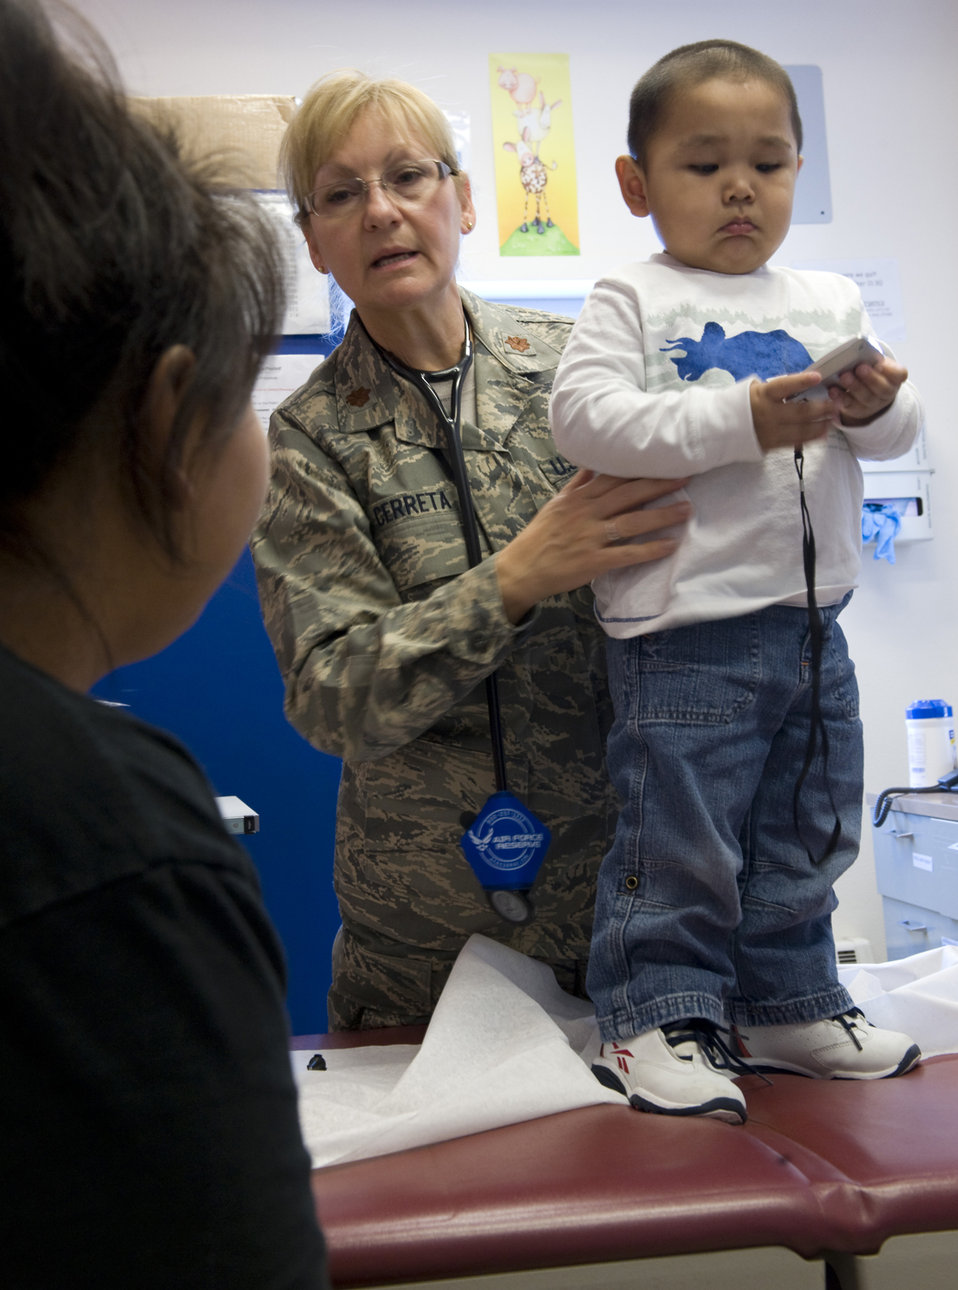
Operation Arctic Care

Maj. Emily Cerreta consults Laura Ballot, mother of 23-month-old Hikerr Snyder, during his well-baby checkup April 14, 2010, in Noorvik, Alaska. Major Cerreta is a family nurse practitioner from the 433rd Airlift Wing at Lackland Air Force Base, Texas, and is in Alaska for Operation Arctic Care, a joint medical training exercise.